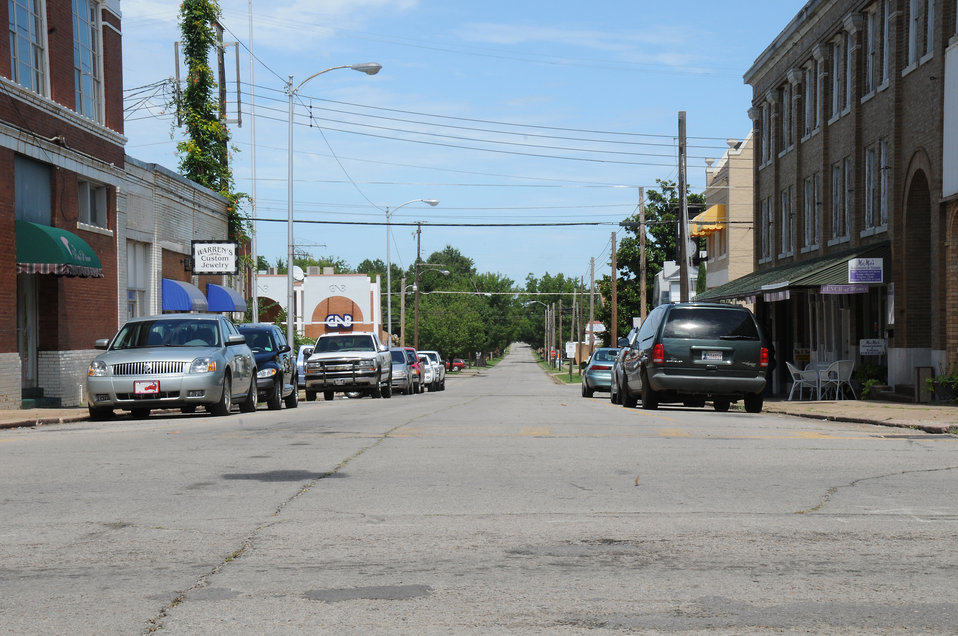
The sun shines on downtown Poteau, OK on August 11, 2009.